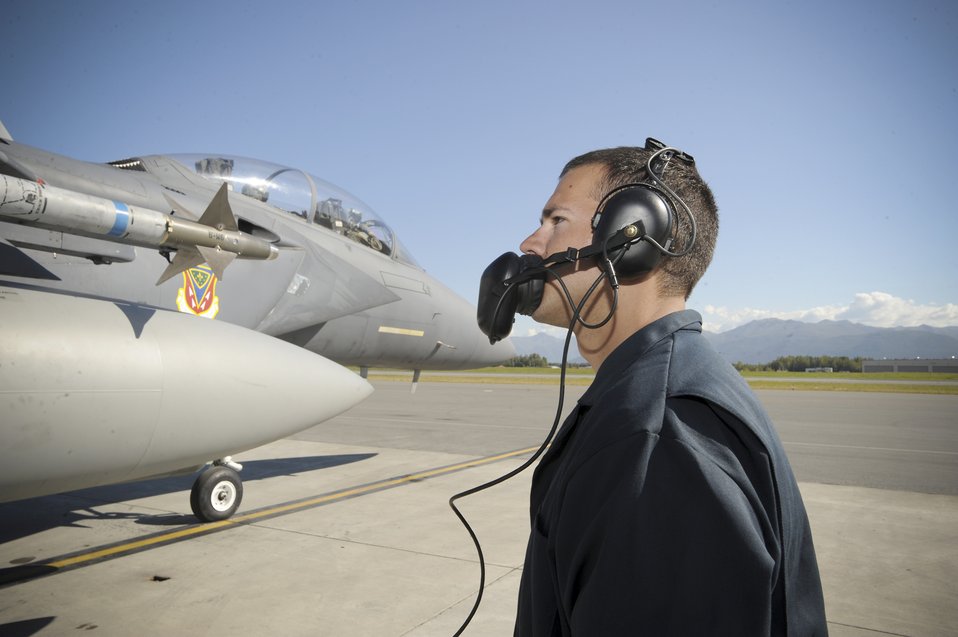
Eagles aid Predators

Senior Airman Kyle Wood talks to Capt. David Gunter during preflight before taking off for a sortie Aug. 25, 2010, at Joint Base Elmendorf-Richardson, Alaska. Captain Gunter is a pilot assigned to the 391st Fighter Squadron and Airman Wood is assigned to the 391st Aircraft Maintenance Unit.